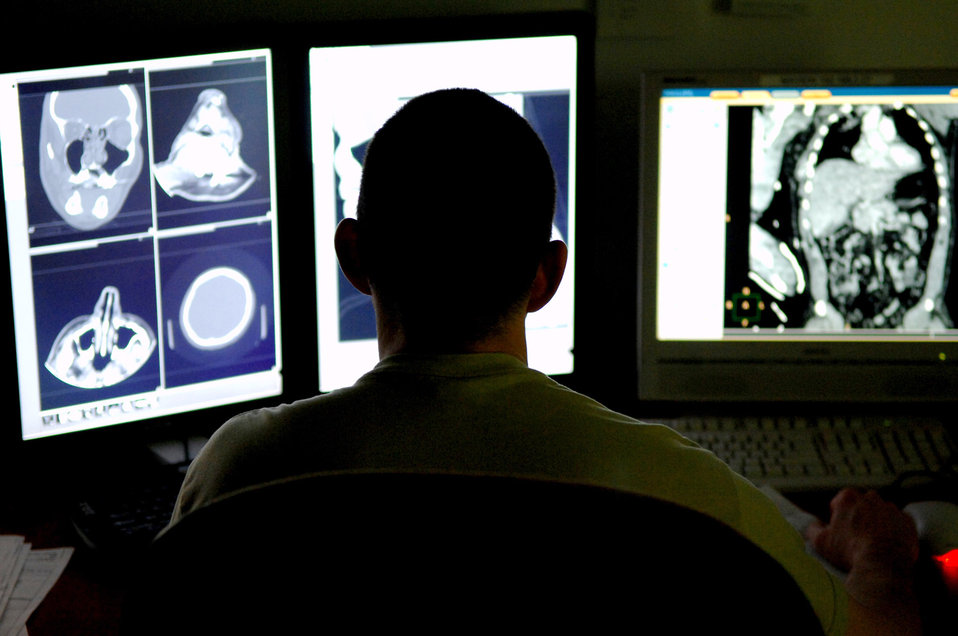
Airmen have X-ray vision

Maj. Michael Matchette reviews CT scans from a trauma patient Feb. 20 at the Air Force Theater Hospital at Balad Air Base, Iraq. The CT scan process goes directly from the scanning machine to the computer, which allows doctors to diagnose the severity of the patient's injuries faster. Major Matchette is a radiologist with the 332nd Expeditionary Medical Support Squadron and is deployed from Lackland Air Force Base, Texas.